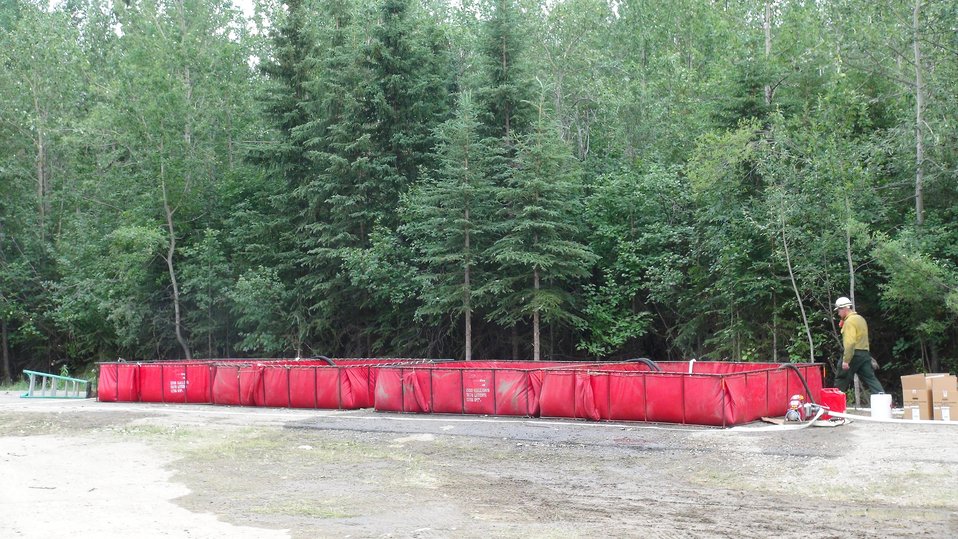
Portable water storage tanks are set up to supply water to helicopters and fire crews. The Moon Lake Complex Fires consists of 2 fires, Moon Lake Fire and Tetlin Junction Ridge Fire, along the Alaska and Taylor Highways near Tok, AK. Lightning strikes on Jun. 25, 2013 caused the fires, which have consumed over 49, 959 acres.